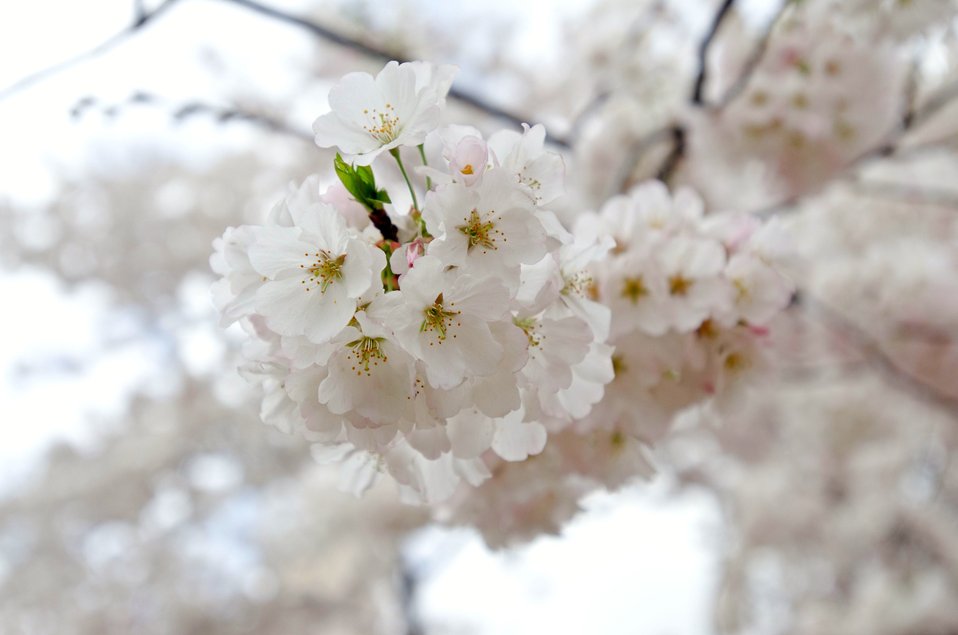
Cherry blossoms at the Tidal Basin in Washington, D.C., on Tuesday, March 20, 2012.